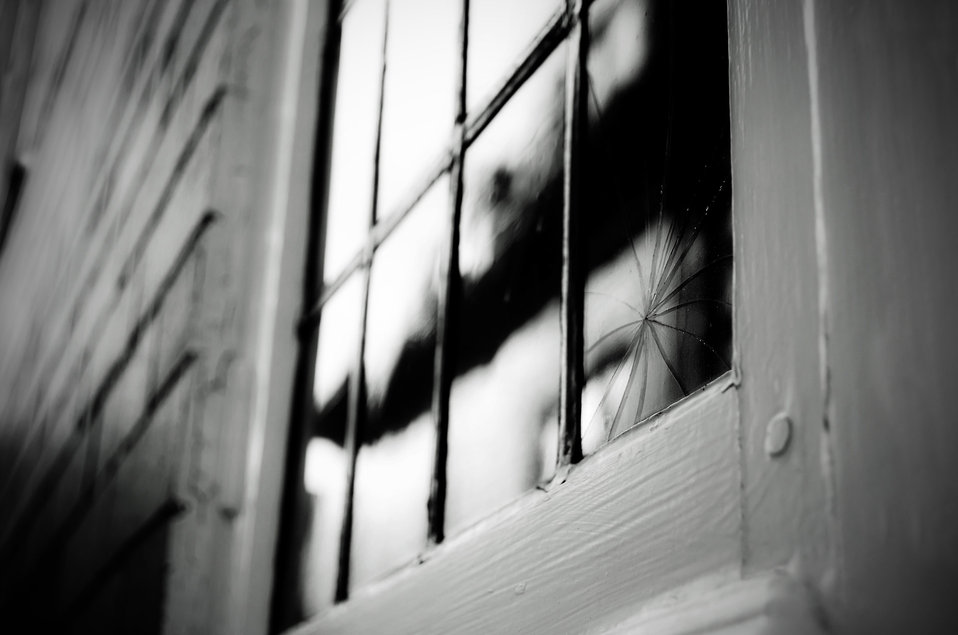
Broken old window.